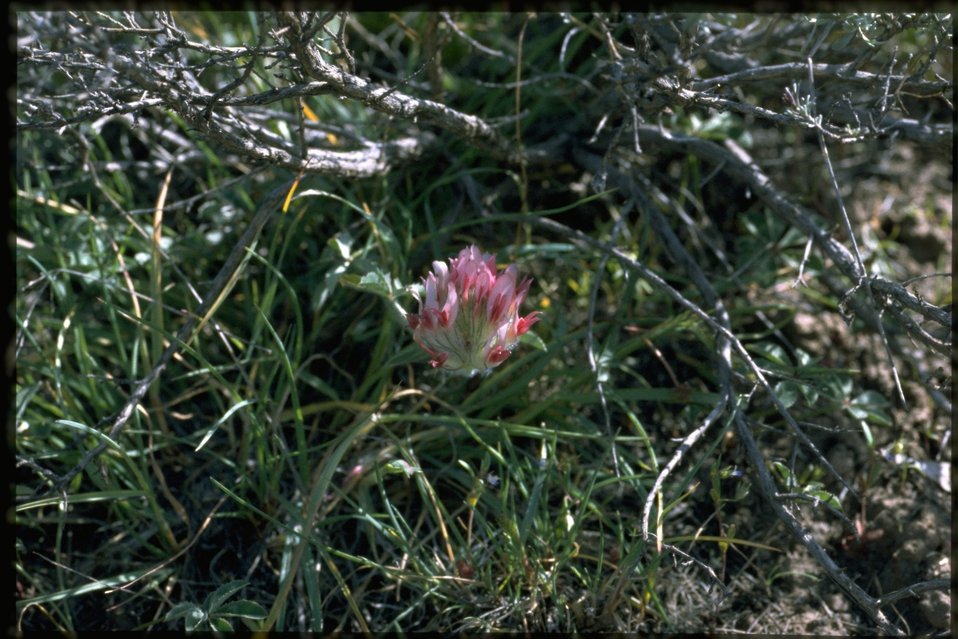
Medium shot of Big-headed Clover (Trifolium Macrocephalum).